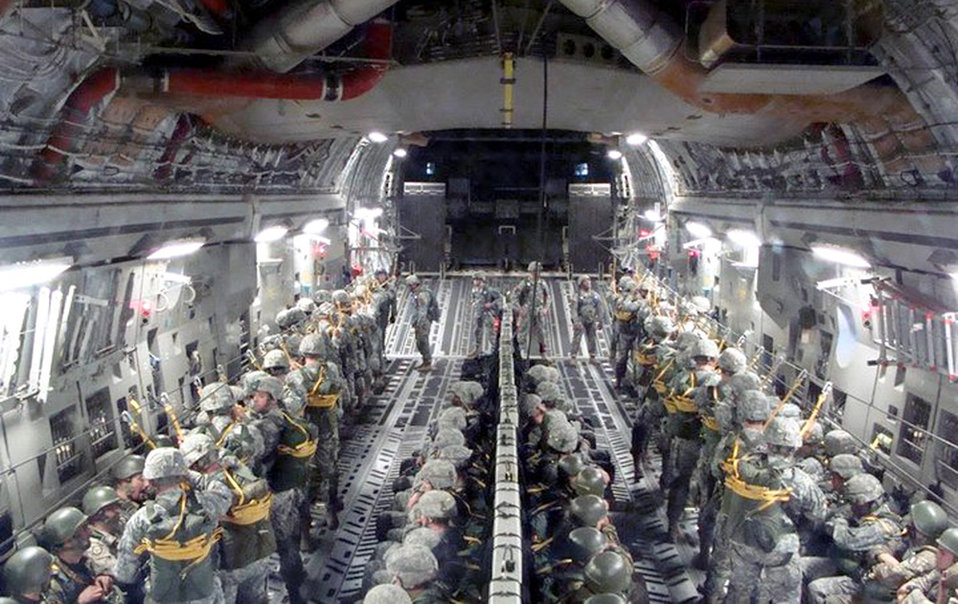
Airmen contribute to training

Paratroopers from the U.S. Air Force, the U.S. Army and the Italian army prepare for a jump from a C-17 Globemaster III March 31, 2011, above Italy.